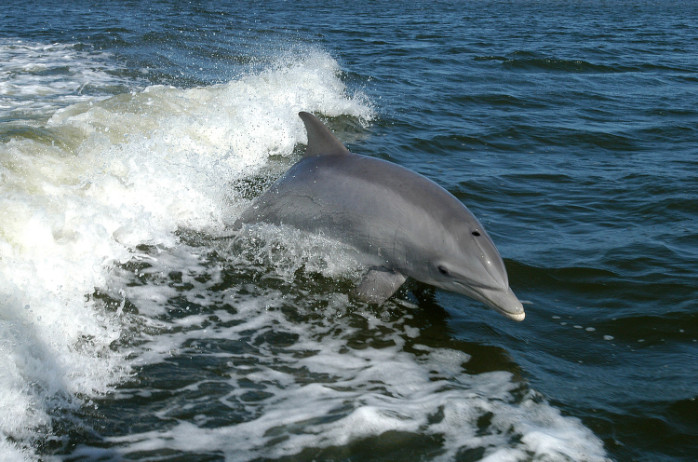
dolphin

Banana River, Merritt Island National Wiildlife Refuge, FL